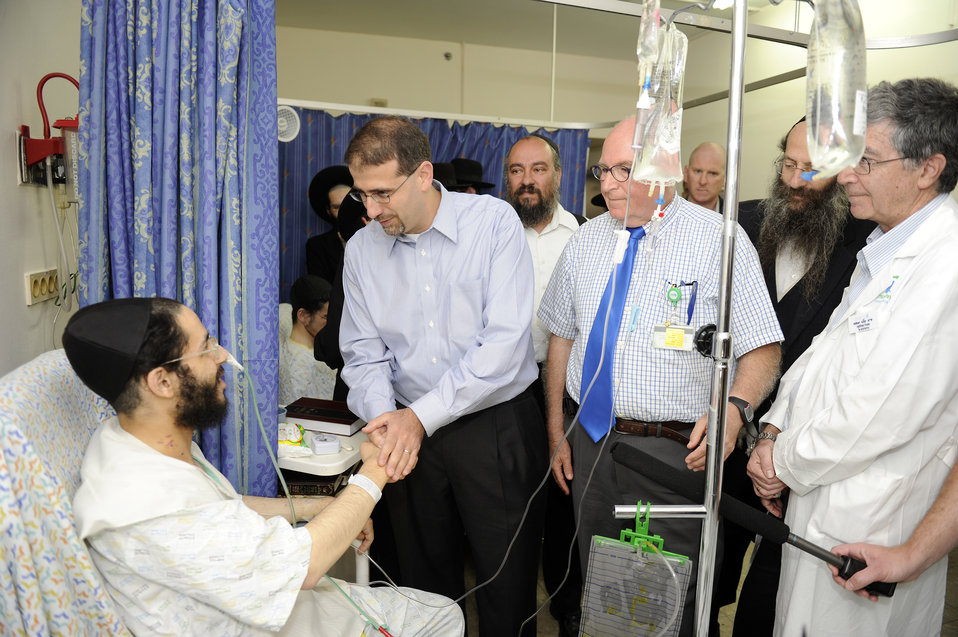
Ambassador Shapiro Visits Victims of Missile Attacks at Kaplan Medical Center

U.S. Ambassador to Israel Dan Shapiro, accompanied by Prof. Jacob Yahav, director of the hospital, visits victims of missile attacks at Kaplan Medical Center in Rehovot, Israel, on August 23, 2011.